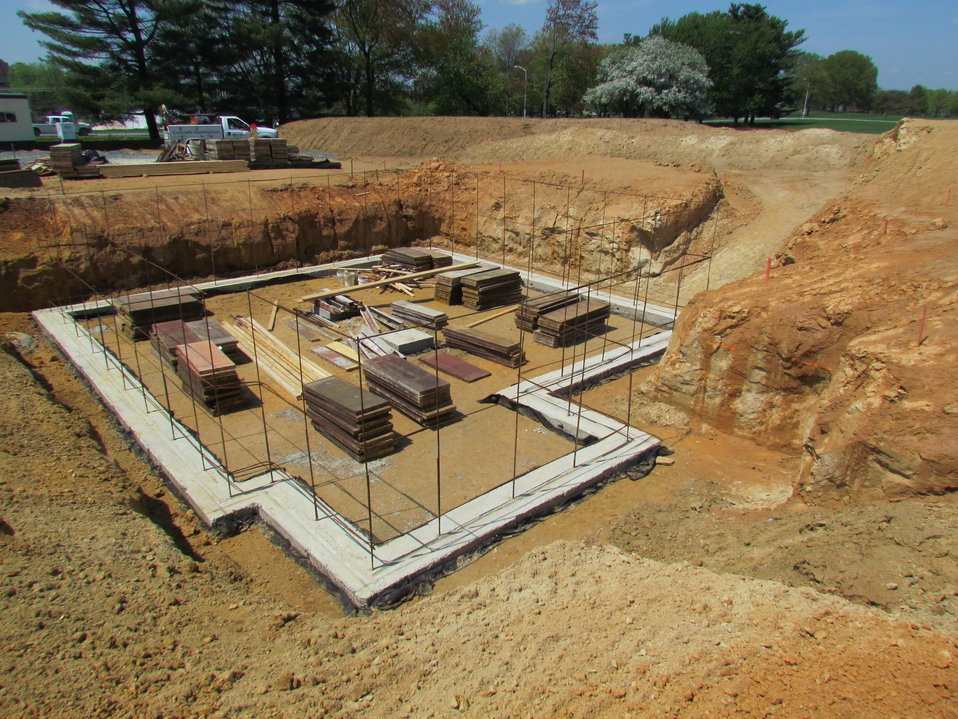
Net-Zero Energy Residential Test Facility - Construction photo showing completion of foundation and initial stages of erecting forms for basement walls.